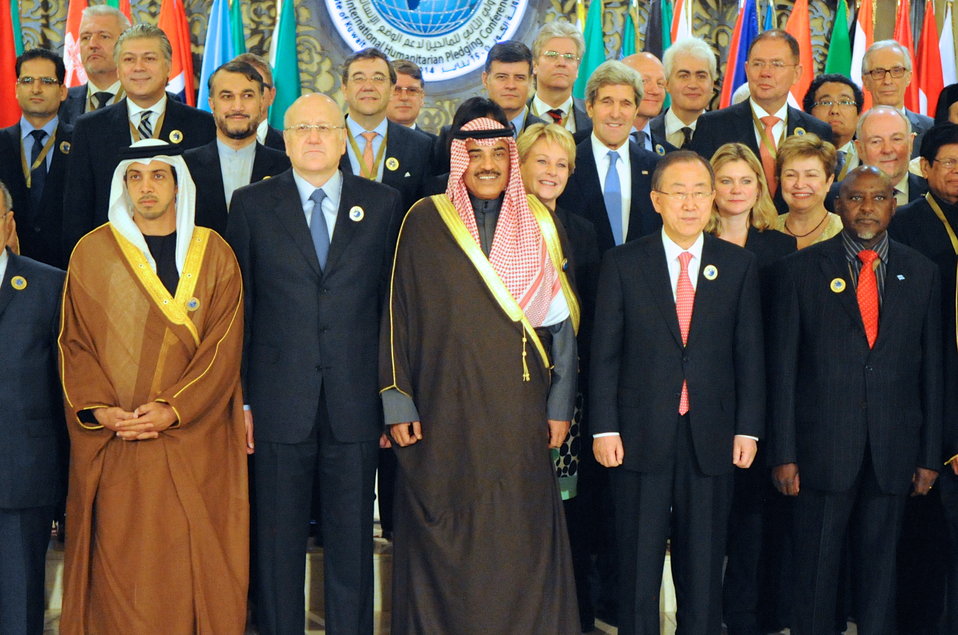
Secretary Kerry Joins Attendees For Syrian Donors' Conference Group Photo

U.S. Secretary of State John Kerry stands behind United Nations Secretary-General Ban Ki-moon and Foreign Minister Sabah Khalid Al Sabah of Kuwait during a group photo before the Syrian Donors' Conference in Kuwait City on January 15, 2014.